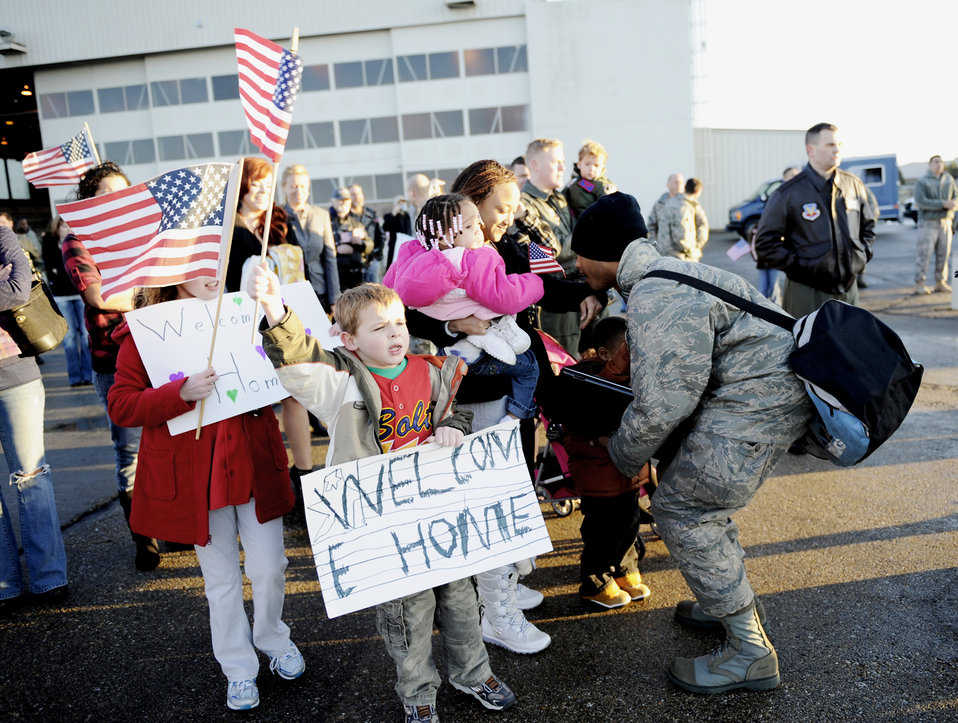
Squadron returns from South Korea

Families of the 389th Fighter Squadron wait for their loved ones returning from a four-month deployment to South Korea Jan. 20, 2010, at Mountain Home Air Force Base, Idaho. More than 300 members of the 389th FS returned from their deployment in support of U.S. government and Department of Defense global engagement strategies.